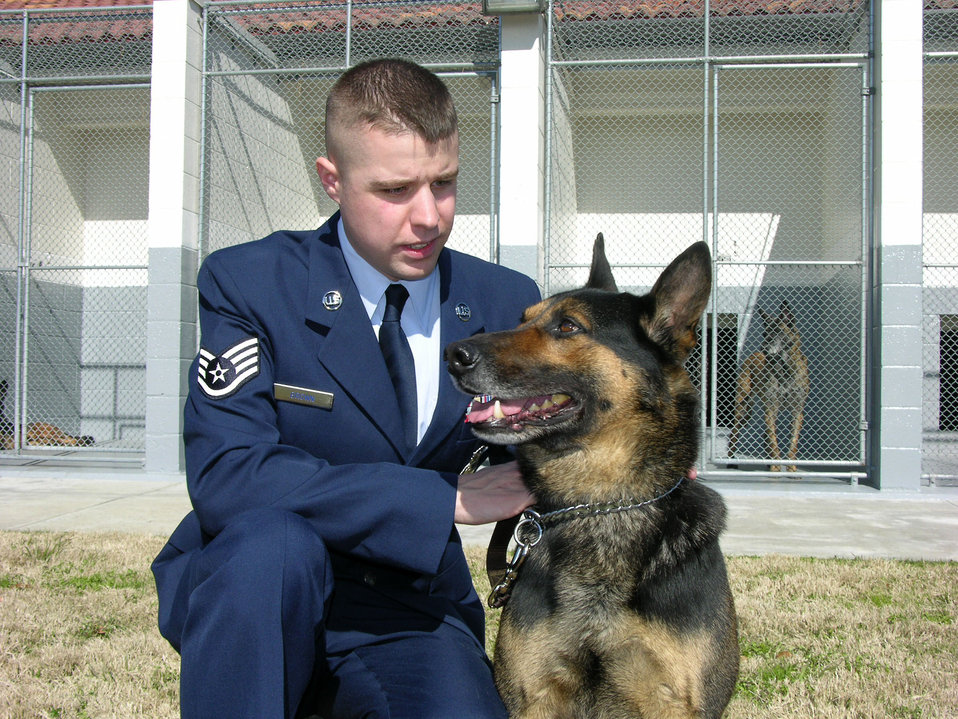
Awarded Purple Heart

Staff Sgt. Robert Brown, 42nd Security Forces Squadron working dog handler at Maxwell Air Force Base, Ala., received a Purple Heart Jan. 31 for wounds he sustained when he and his military working dog Nero deployed to Iraq. While checking a field near Tahrir City, Iraq, Nero warned the sergeant to an improvised explosive device hidden in the field. The IED was then detonated by an insurgent, and Sergeant Brown suffered a concussion and a contusion to his right leg.